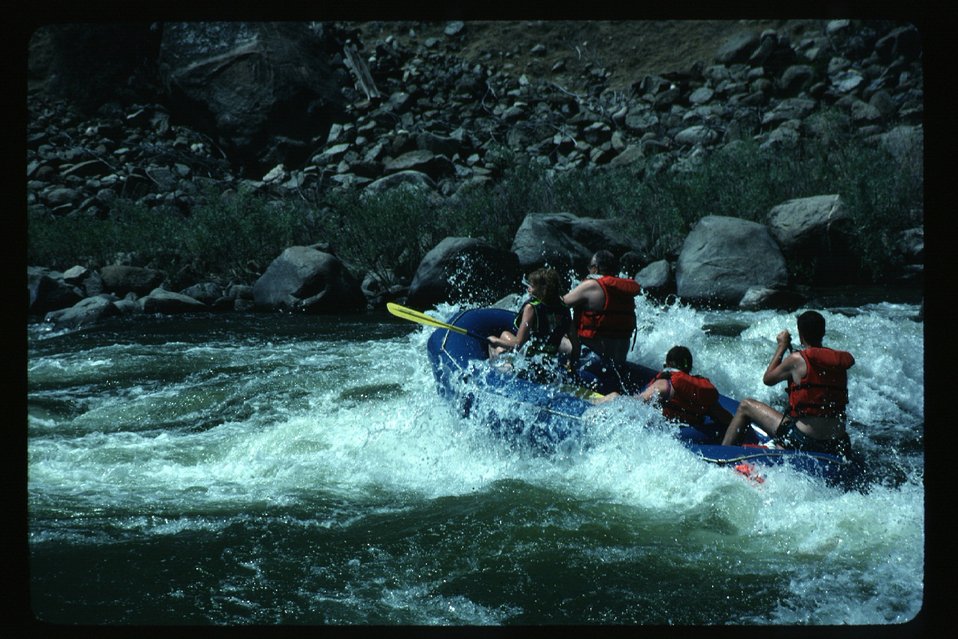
Kayaker in white water Kayaking Four Rivers Field Office LSRD Lower Snake River District